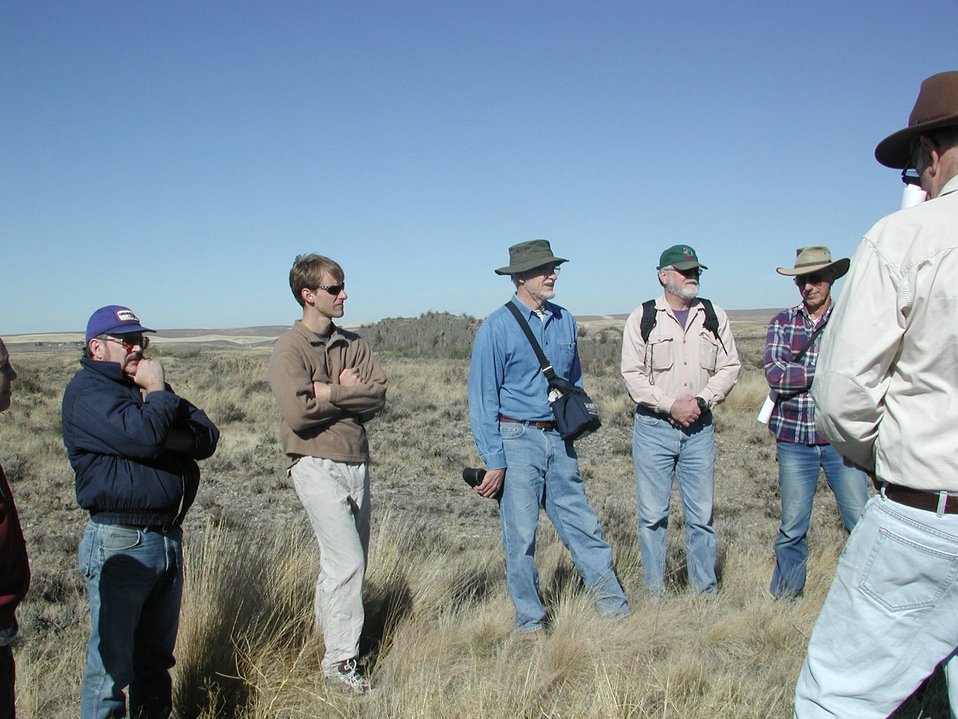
Dr. Dale Stradling (third from left) talkes about the basalt geloloy of the area with with the Pulblic Lands Day tour group.